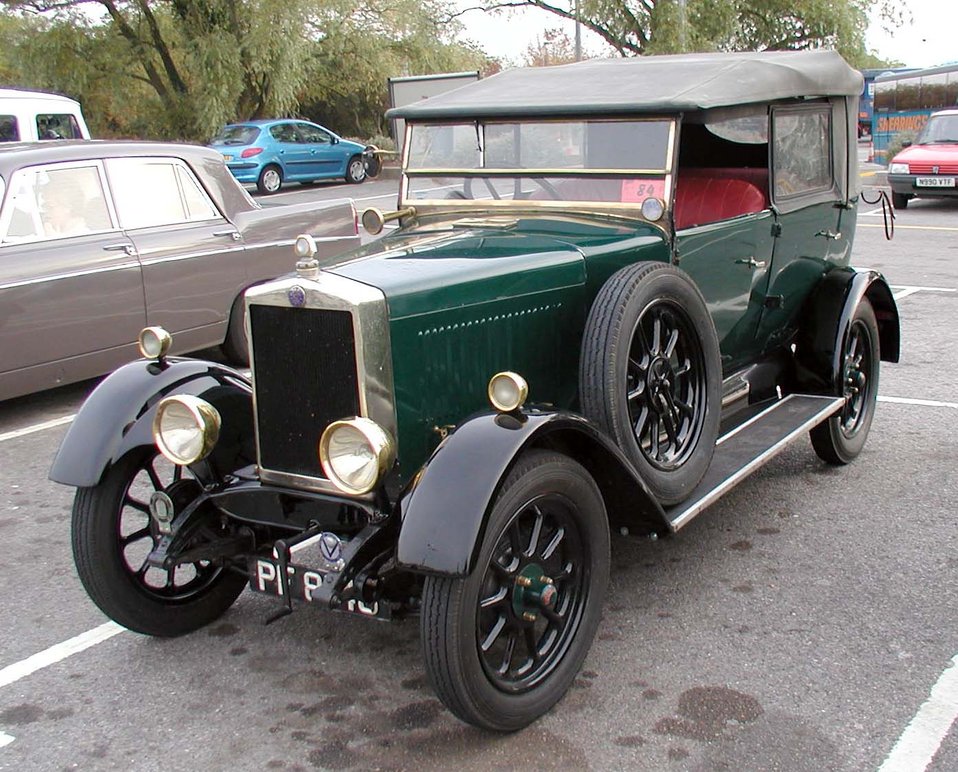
1927.morris.cowley.arp